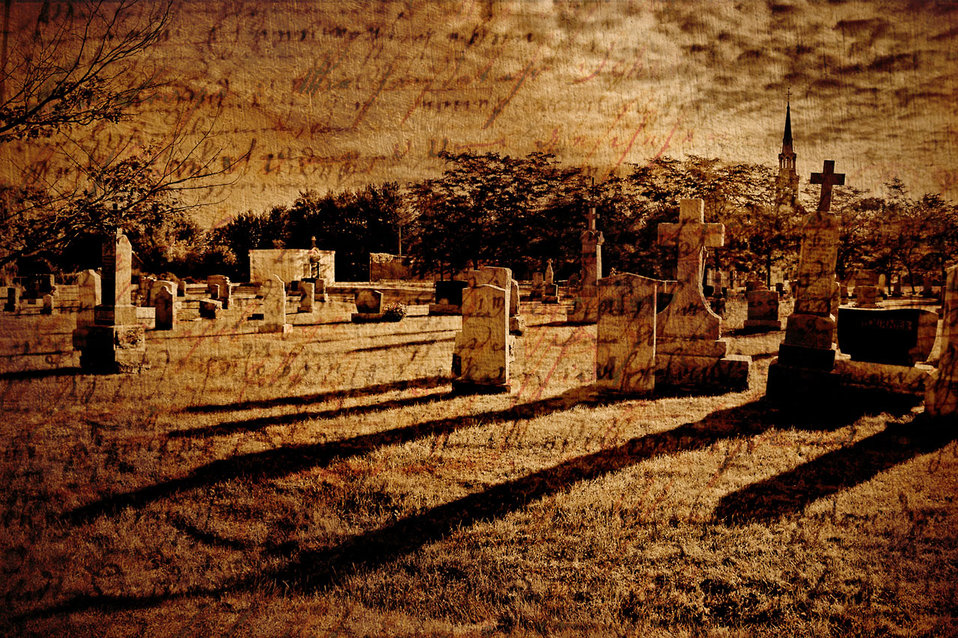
Cemetery montage.